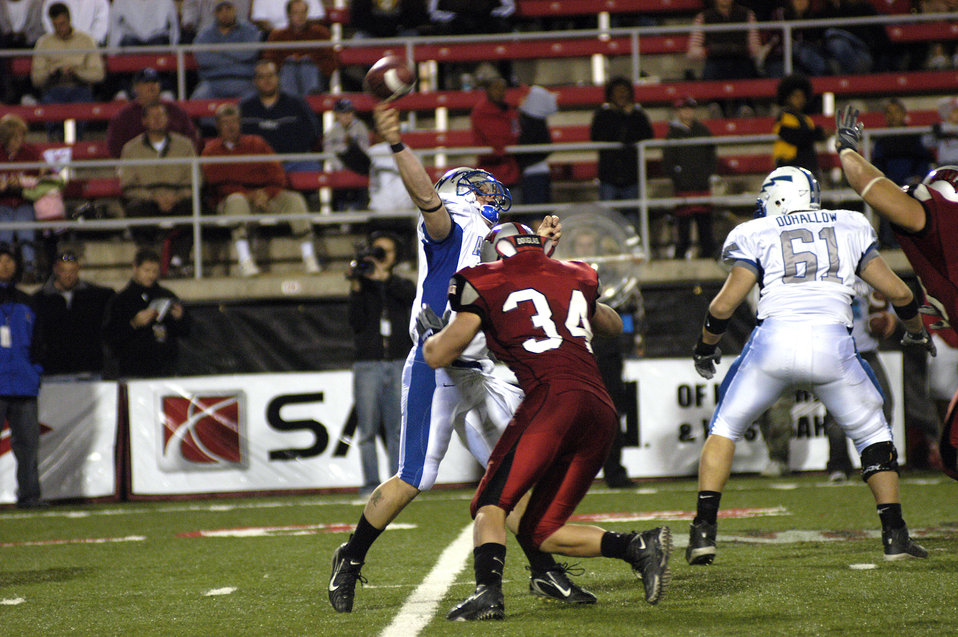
UNLV edges AF in 42-39 shootout

University of Nevada-Las Vegas linebacker Matt Pattison tackles Air Force quarterback Shaun Carney as he tries to complete a pass Nov. 24 in Las Vegas. The UNLV Runnin' Rebels amassed 555 yards in total offense to defeat the Falcons 42-39.